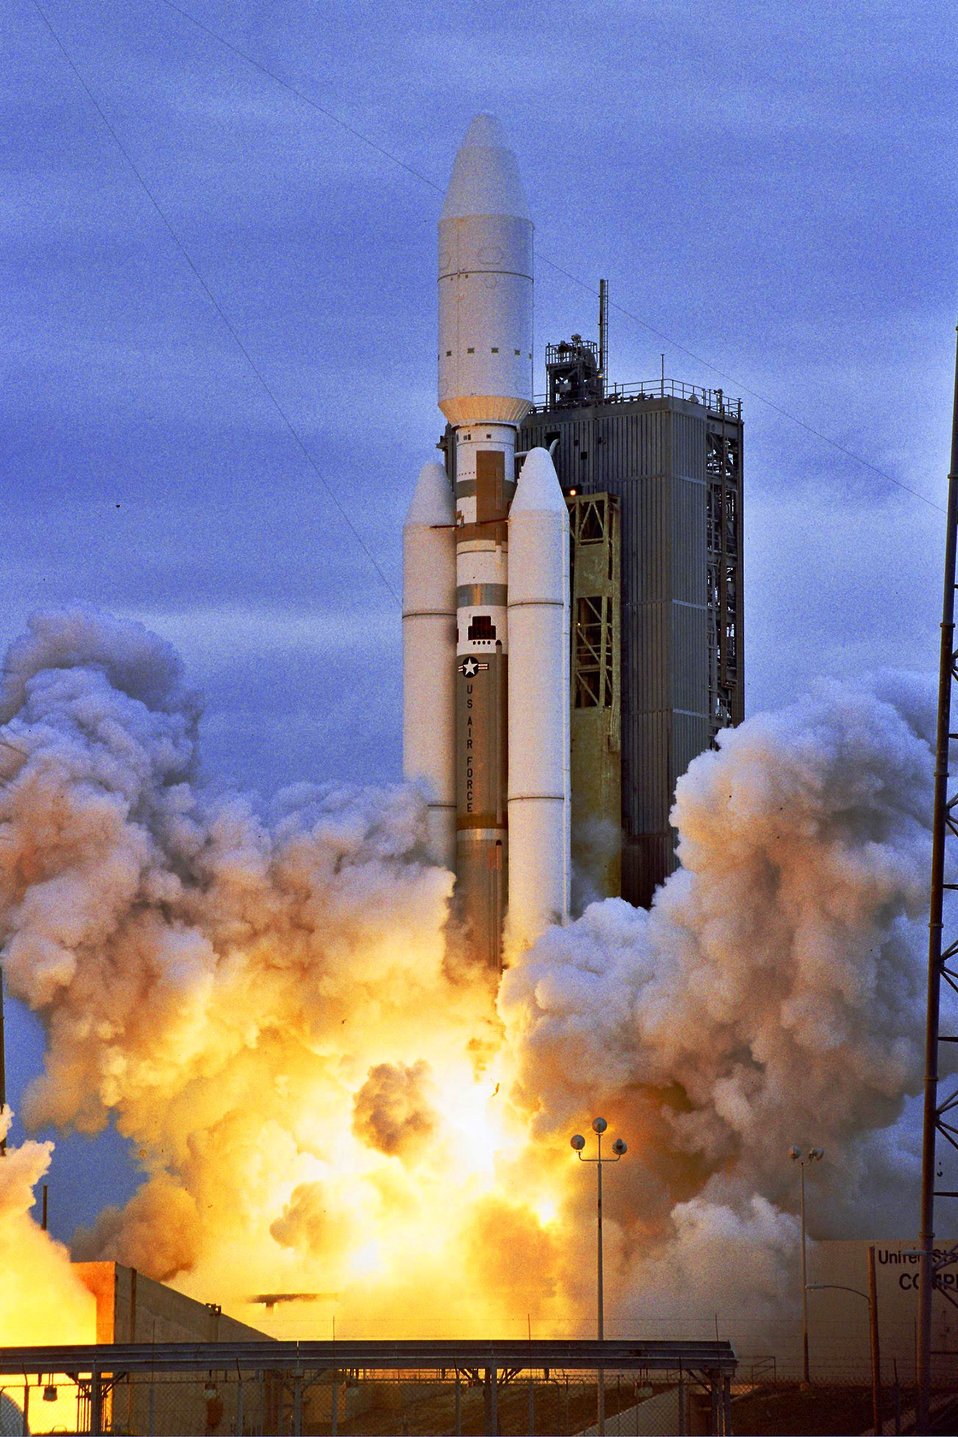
Satellite

ST. LOUIS (AFPN) -- On the final mission for the program, a Boeing Inertial Upper Stage payload booster vehicle successfully deployed an Air Force Defense Support Program satellite Feb. 14. Liftoff occurred at 1:50 p.m. EST from Space Launch Complex 40 at Cape Canaveral Air Force Station, Fla. The Defense Support Program is a satellite surveillance system providing the United States and its allies with ballistic missile early warning and other information related to missile launches, surveillance and the detonation of nuclear weapons.